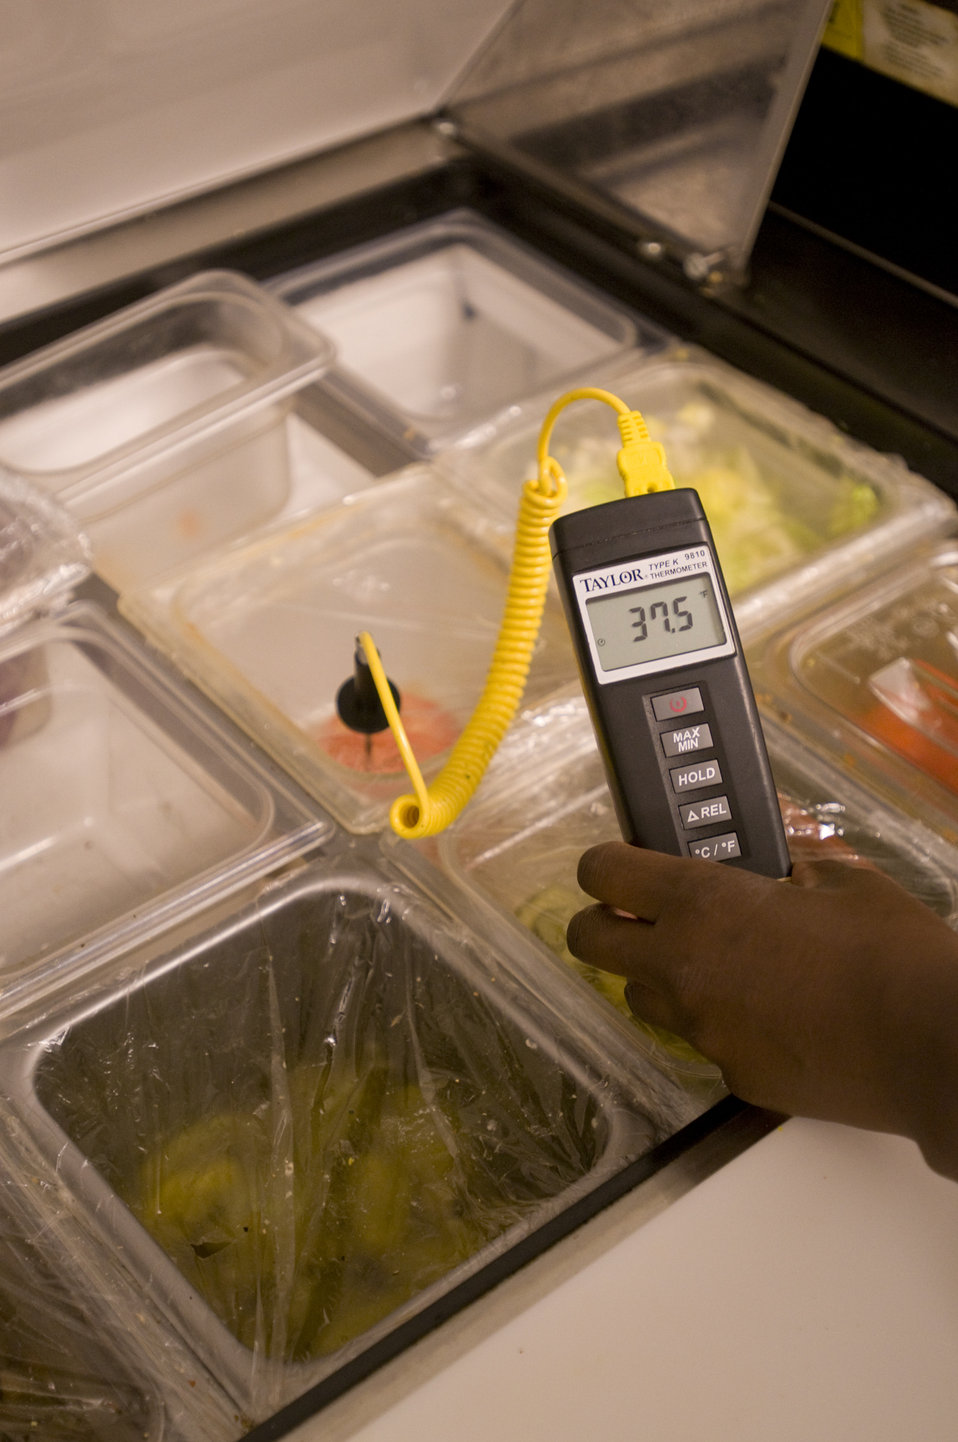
This image depicts the left hand of a state-appointed public health inspector holding an electronic thermometer. The thermosensitive probe had been placed into a cold table container of an unknown food, and had recorded a temperature of 37.5oF, which when converted, equals 3.1oC.